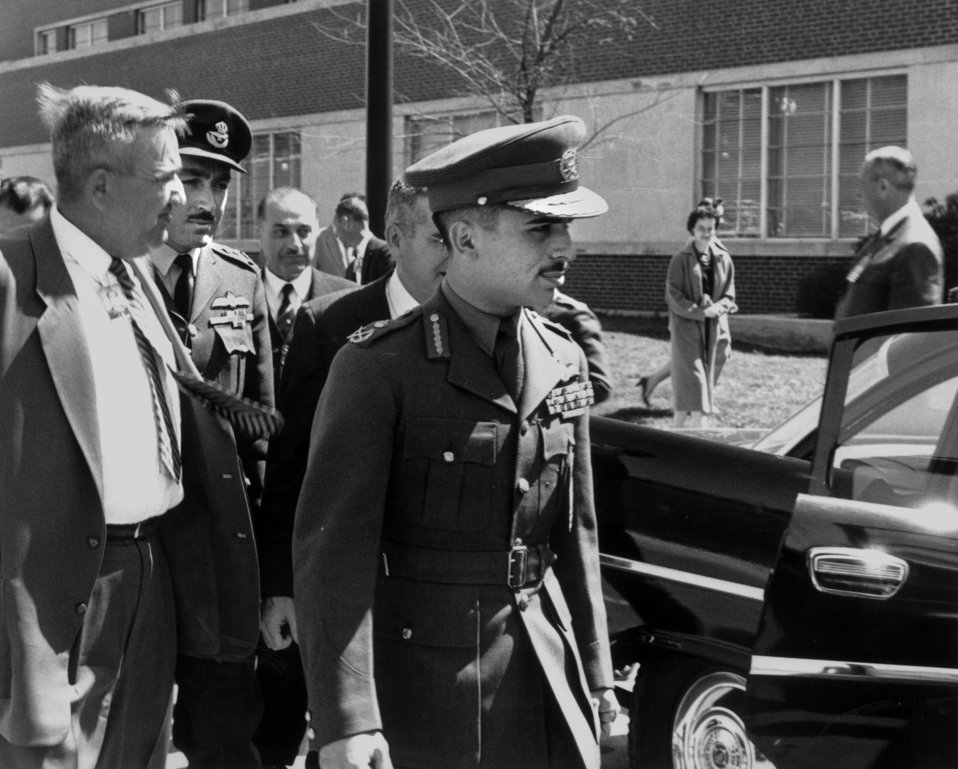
King Hussein of Jordan Tour at Oak Ridge National Lab.

59-239-a10 DOE photo Ed Westcott

King Hussein of Jordan Tour at Oak Ridge National Lab. Oak Ridge Tennessee 3-31-1959